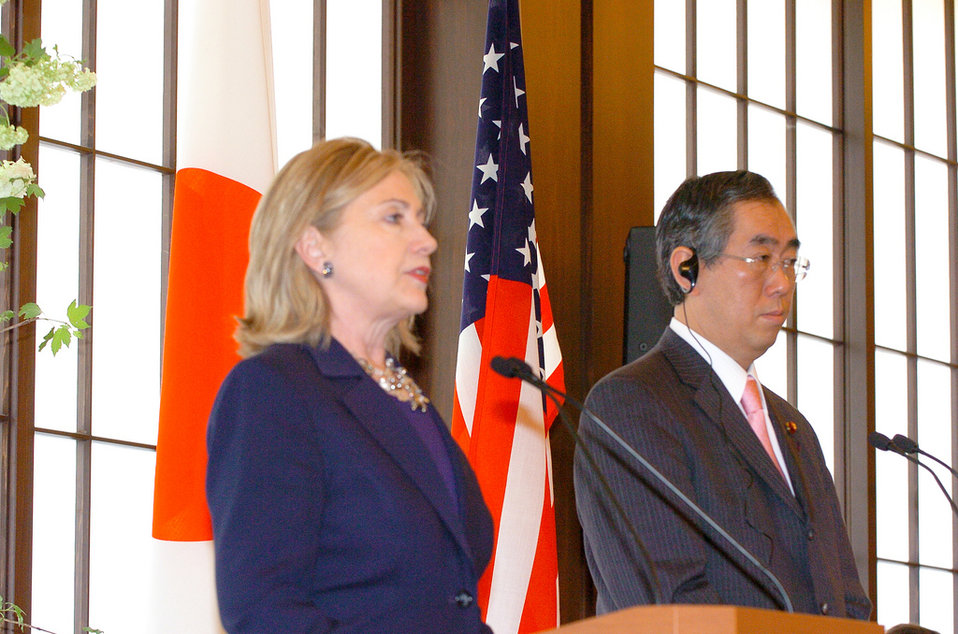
Secretary Clinton and Japanese Foreign Minister Matsumoto

U.S. Secretary of State Hillary Rodham Clinton and Japanese Foreign Minister Takeaki Matsumoto address reporters during a joint press conference at the Iikura Guest House in Tokyo, Japan, on April 17, 2011.